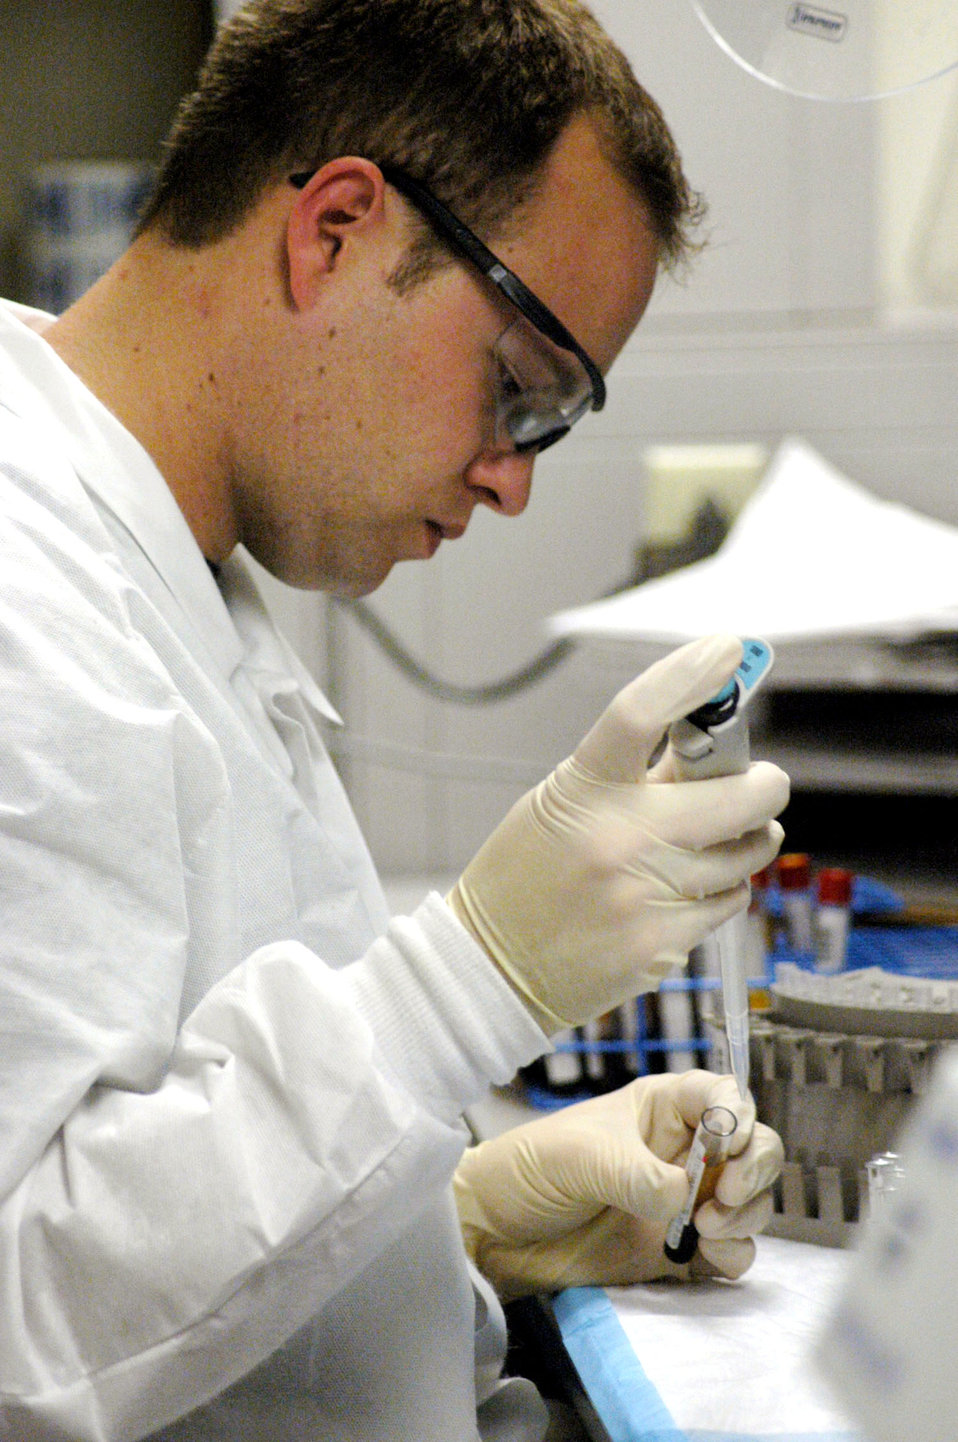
Analyze this

ROBINS AIR FORCE BASE, Ga. -- Airman 1st Class Keith Johnson tests blood samples for cholesterol readings. He is a laboratory technician with the 78th Medical Group here. Lab techs support the group's various departments, analyzing hundreds of fluid and tissue samples each day to help physicians diagnose patient ailments.